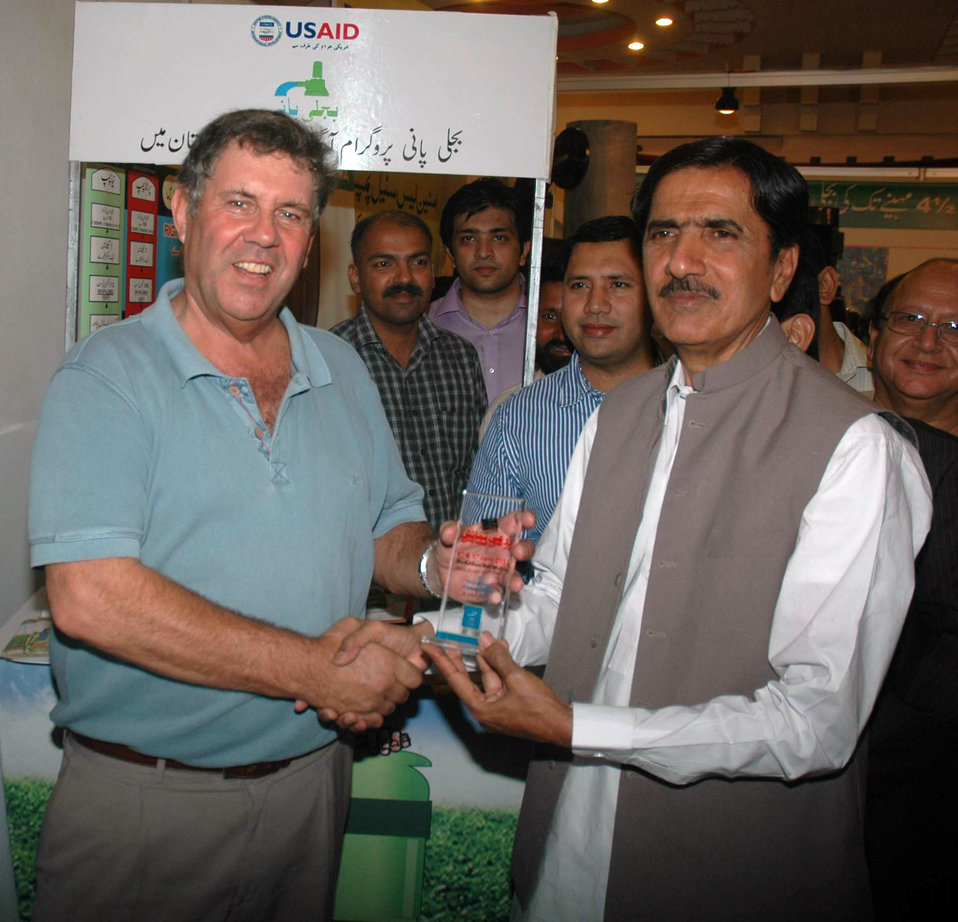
Jang Agriculture Expo

Multan, June 4, 2011 - Malik Ahmad Ali Aulakh, Punjab Minister for Agriculture acknowledges USAID’s Tubewell Efficiency Improvement Program for its participation in the Jang Agriculture Expo.